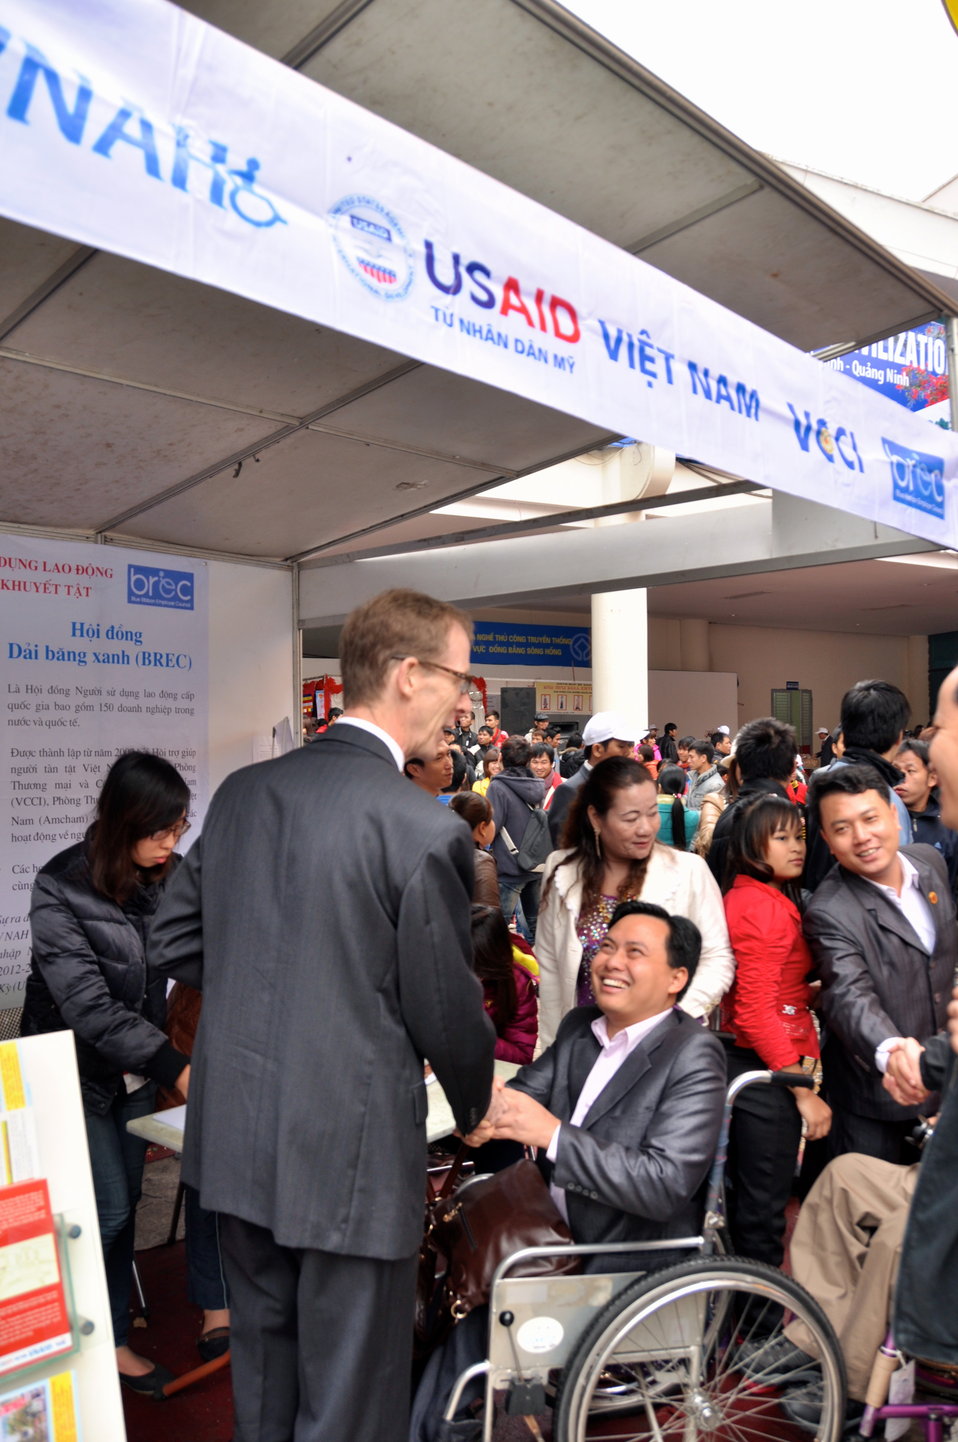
USAID Mission Director Joakim Parker joins celebration of International Day of Persons with Disabilities in Hanoi, Vietnam

December 2, 2012